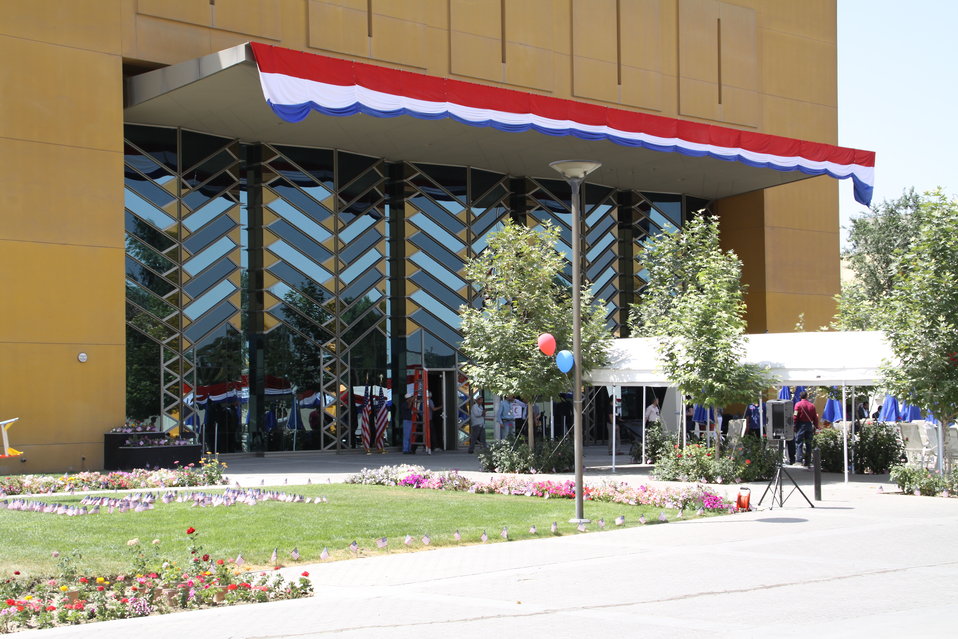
Kabul Official July 4th Celebration